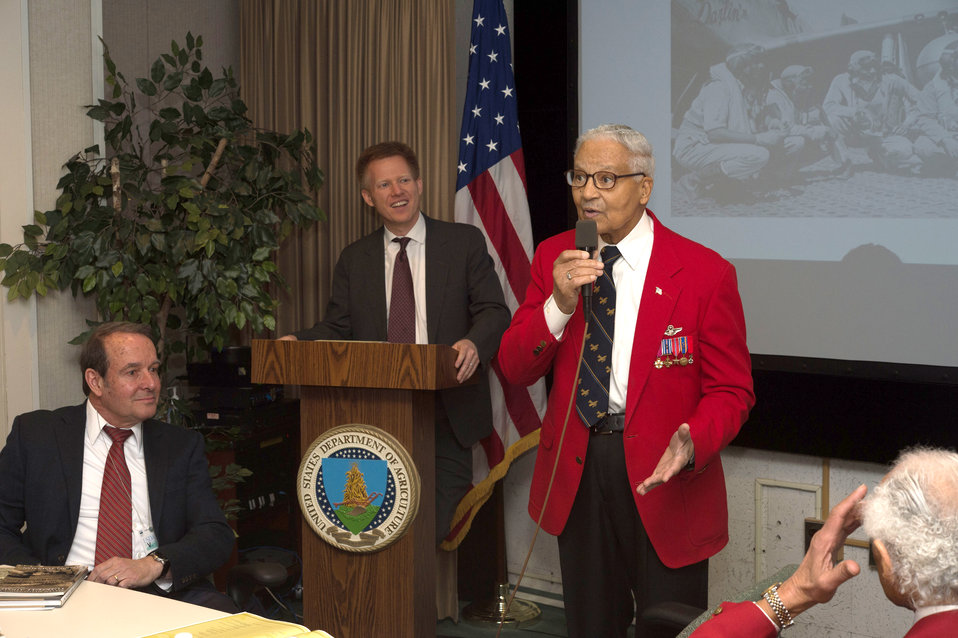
Pilot and Tuskegee Airman, Colonel Charles Edward McGee, U.S. Air Force (USAF) ret. speaks at the U.S. Department of Agriculture's (USDA) Office of the Assistant Secretary for Civil Rights (OASCR) program “In conversation With Tuskegee Airmen”, which honored the airmen’s successes both overseas and at home at USDA in Washington, D.C. on Thursday Mar. 27, 2014. Col. McGee spoke about his experiences in the Army Air Corp (later the Army Air Force and U.S.Air Force). Questions from the audience provided several opportunities for discussion about civil rights challenges and how they achieved success and respect.